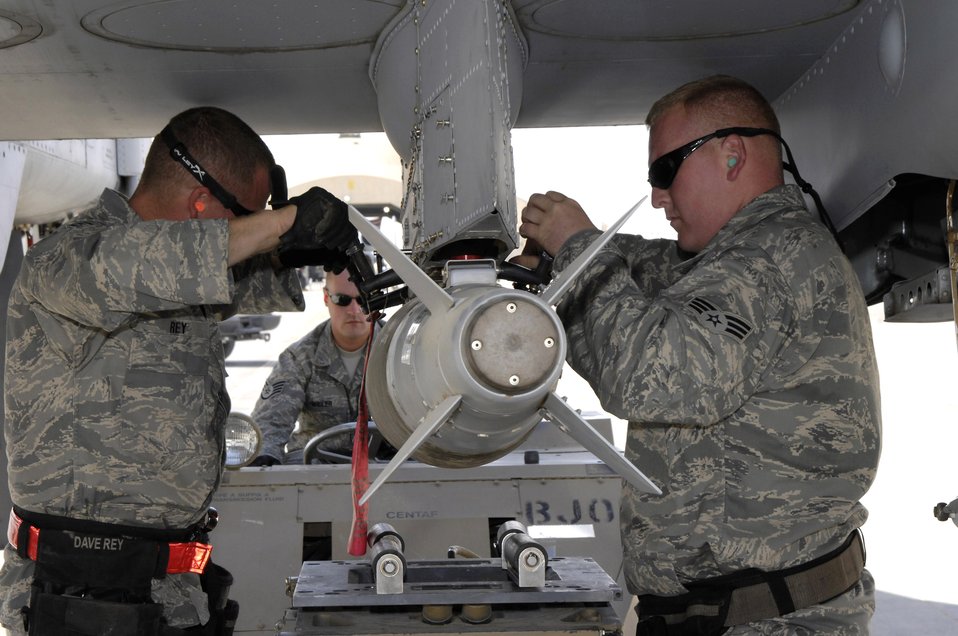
Upgraded A-10s prove worth in Iraq

Senior Airman Larry Lewis, Staff Sgt. Chris Miller, and Tech. Sgt. David Rey load a Joint Directed Attack Munition to an A-10 Thunderbolt II Oct. 27 at Al Asad Air Base, Iraq. The A-10C's are assigned to the 104th Expeditionary Fighter Squadron, which is made up primarily of members from the 175th Maryland Air National Guard. Airman Lewis and Sergeants Miller and Rey are Maryland Air National Guard weapons loaders. The 104th EFS is the first unit to use the C-model A-10 in a combat zone. Its upgrades have made air power more efficient and have streamlined the close-air-support mission.